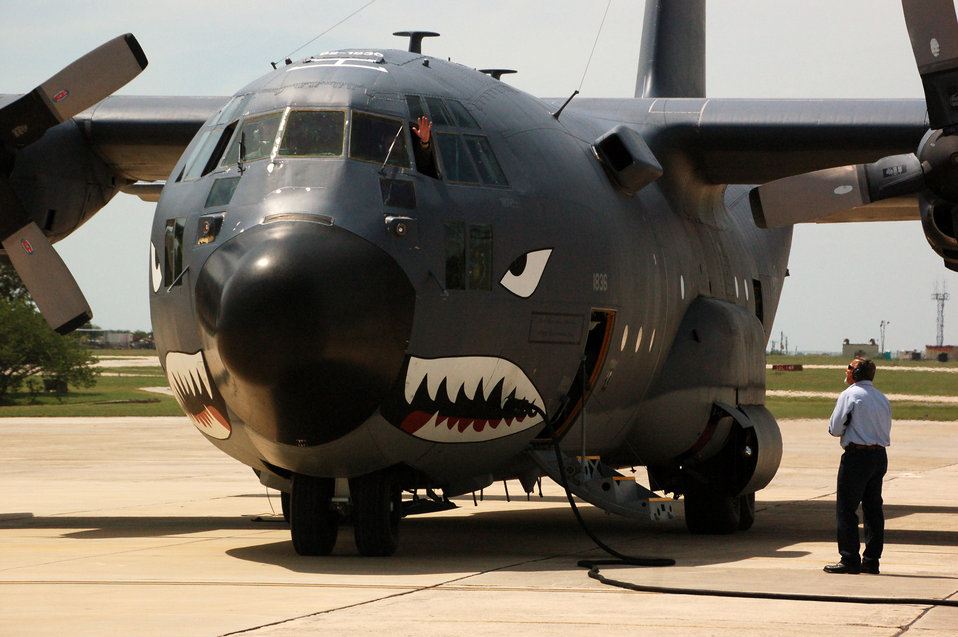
Hurricane Ike support

A C-130 Hercules with the 331st Air Expeditionary Group sits on the tarmac at Randolph Air Force Base, Texas, Sept. 12. The aircraft delivered search and rescue personnel and equipment that was being staged at the base to provide support in the aftermath of Hurricane Ike.